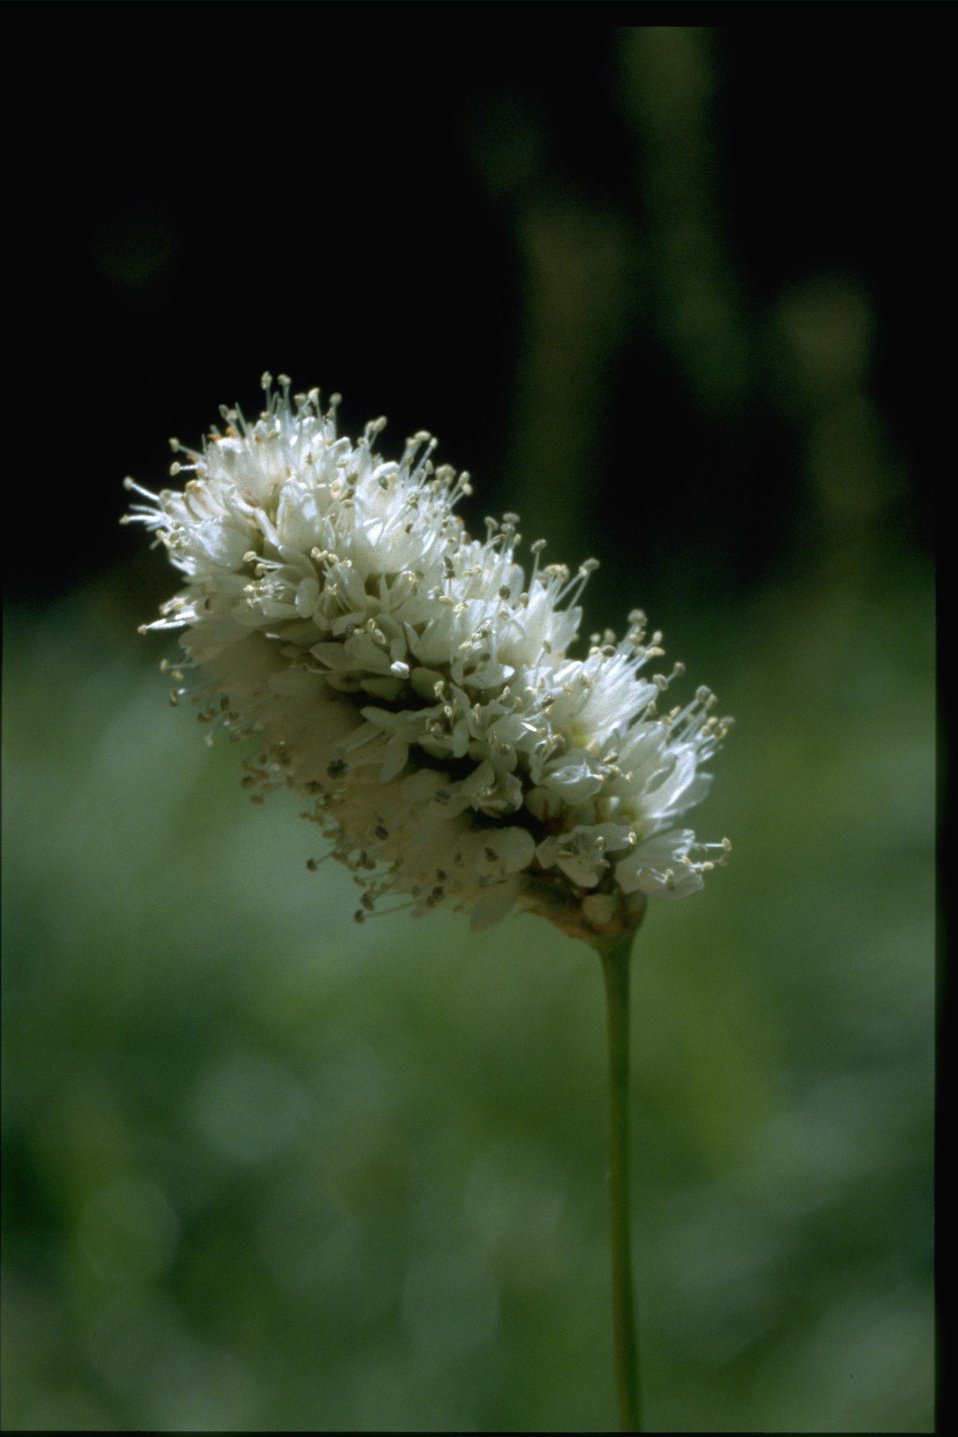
Medium shot of Polygonum bistortoides.